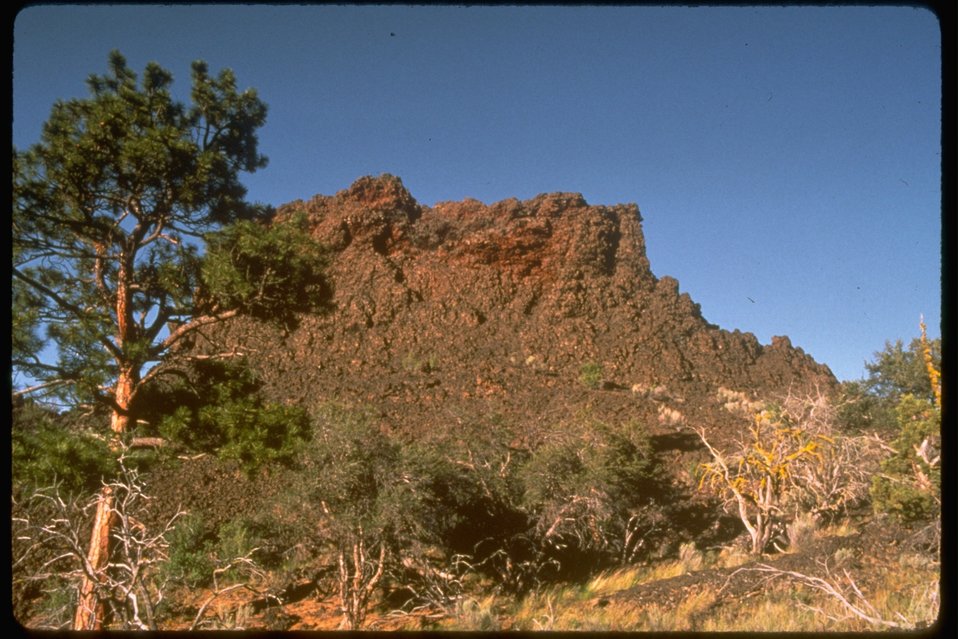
Spatter Cone in the lava beds of the Devil's Garden Wilderness Study Area. OR 3-128.